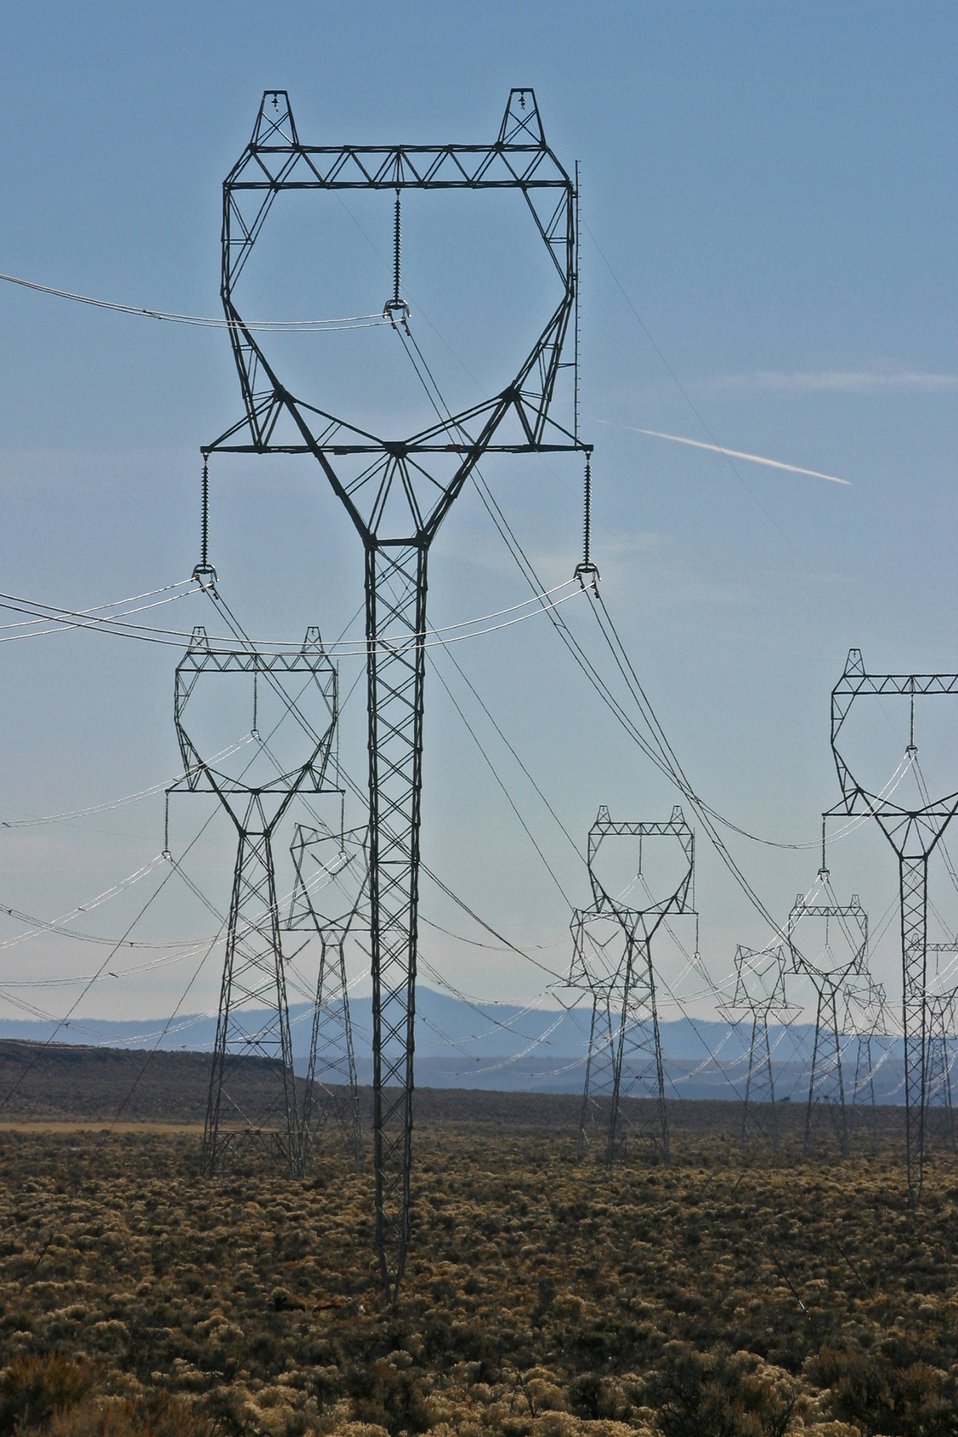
Power transmisson lines cross BLM lands in eastern Oregon.